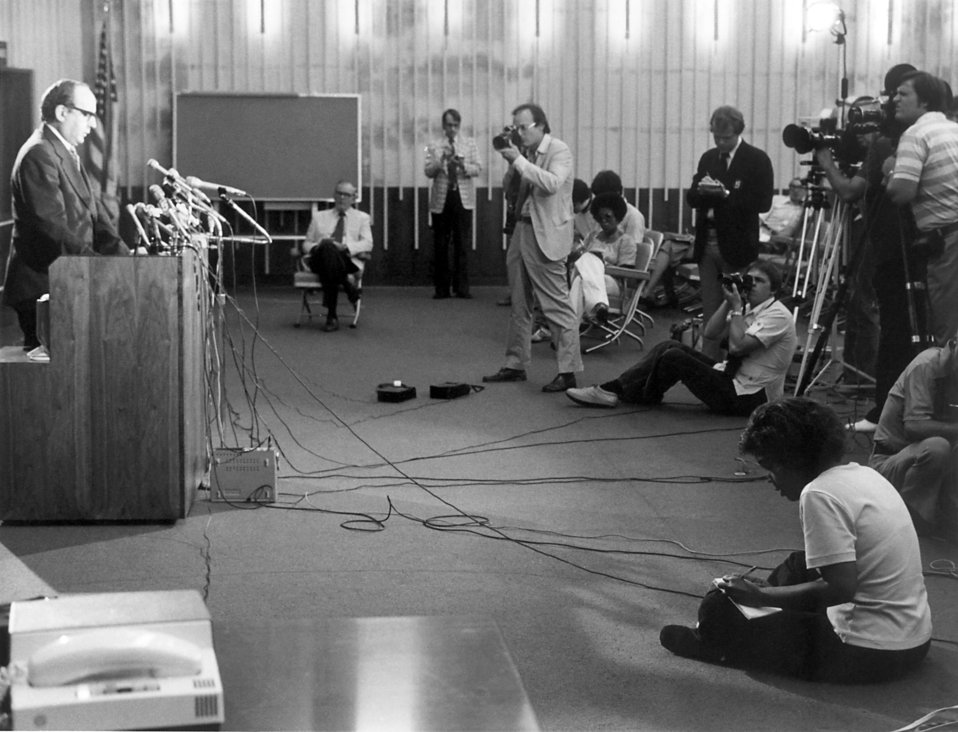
Dr. David Sencer, Fmr. CDC Director at a press conference on Legionnaire's disease, 1976.